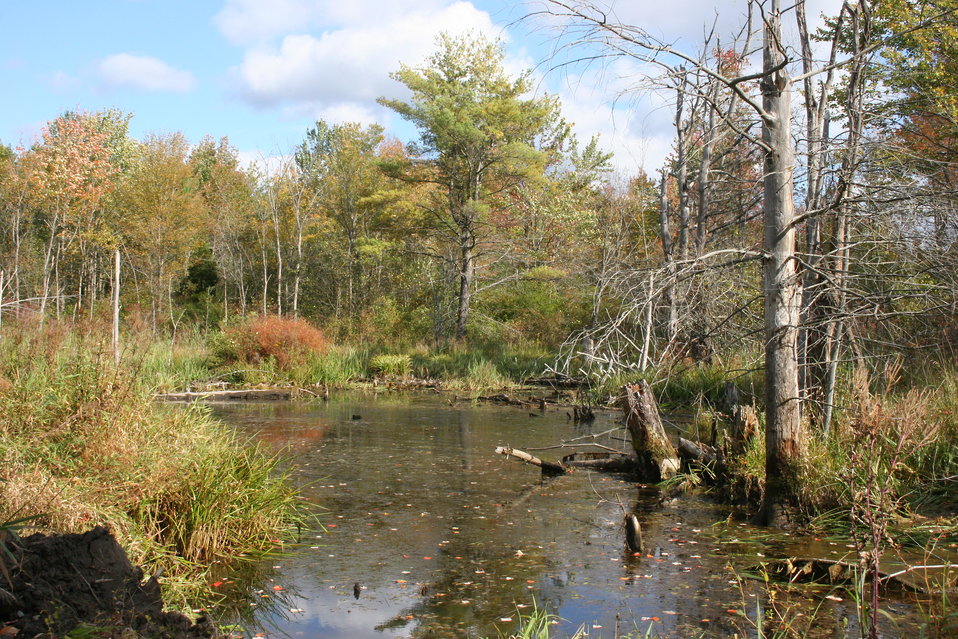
Fall scene at Great Bay NWR

Fall scene at Great Bay National Wildlife Refuge in Newington, NH.